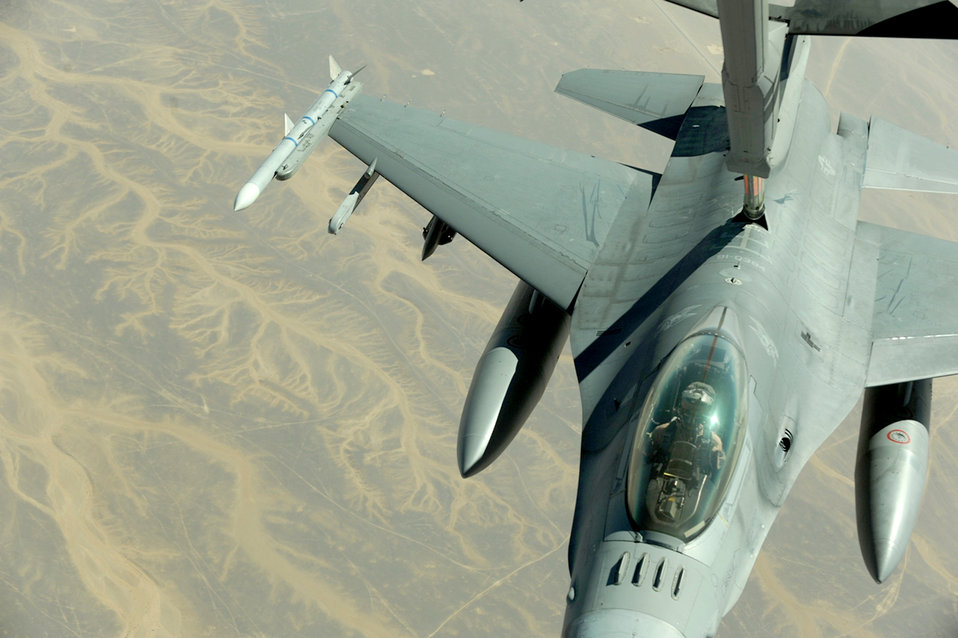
Jordan

A U.S. Air Force F-16 Fighting Falcon from the 77th Fighter Squadron, at Shaw Air Force Base, S.C., receives fuel from a KC-10 Extender from the 2nd Air Refueling Squadron at Joint Base McGuire, N.J., Oct. 20, 2010, near Azraq Air Base, Jordan as part of The Falcon Air Meet 2010. The purpose of The Falcon Air Meet is to improve international military relations and joint air operations.